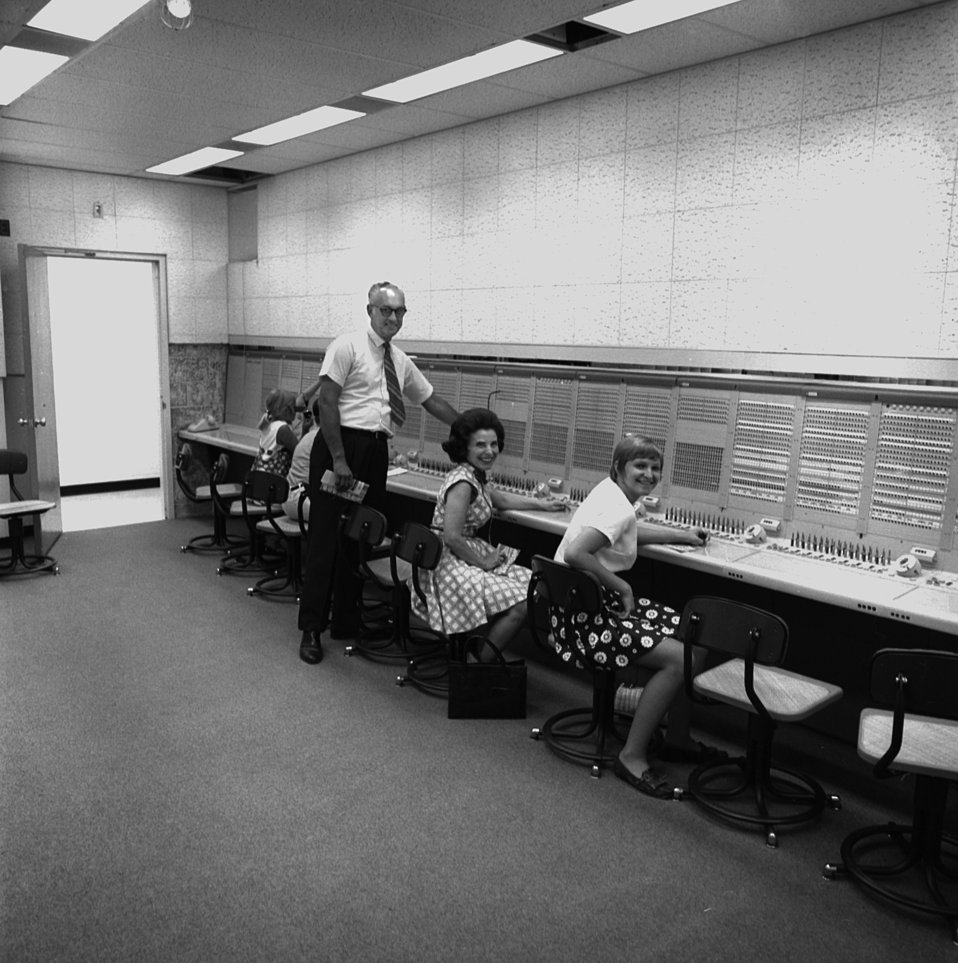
Formal Dedication New AEC (Atomic Energy Commision) - FOB (Federal Office Building) Oak Ridge

70-173n DOE Photo by Frank Hoffman
Formal Dedication New AEC (Atomic Energy Commision) - FOB (Federal Office Building) Oak Ridge Tennessee 6-27-1970